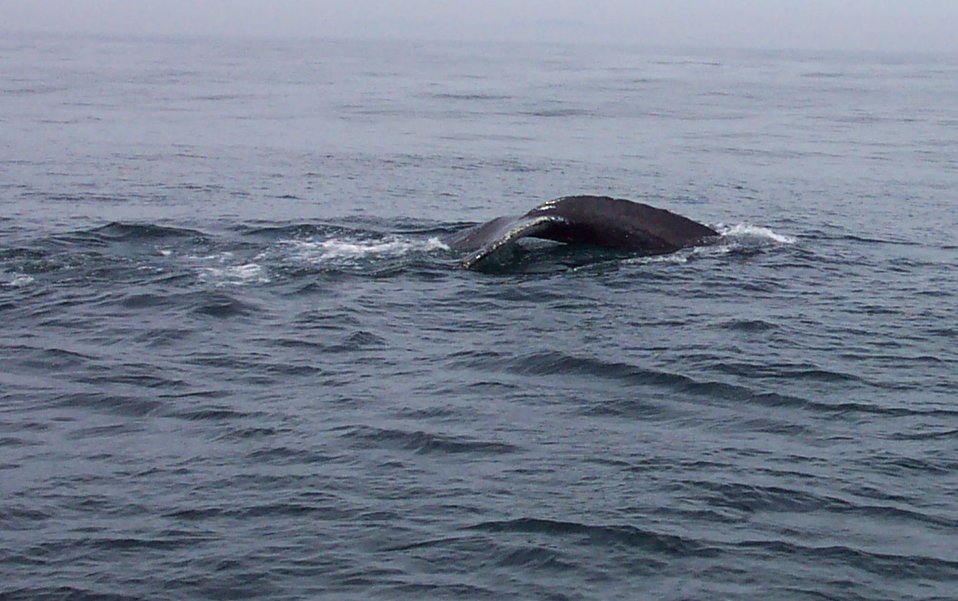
A humpback whale in the Gulf of Maine about 20 miles south of Bar Harbor.